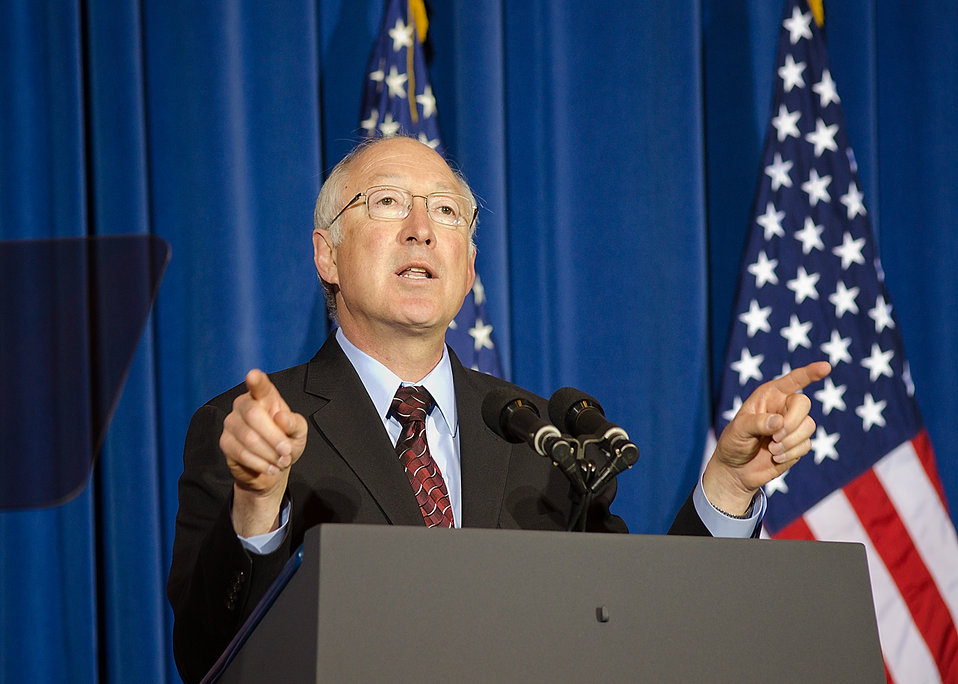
Interior Secretary Ken Salazar addresses the audience at a conservation conference hosted by The White House, “Growing America’s Outdoor Heritage and Economy” at the Department of the Interior, Yates Auditorium in Washington, DC, Friday, March 2, 2012 as part of President Barrack Obama’s, “America’s Great Outdoors Initiative” to spotlight community-driven conservation efforts and discuss how to build their success.